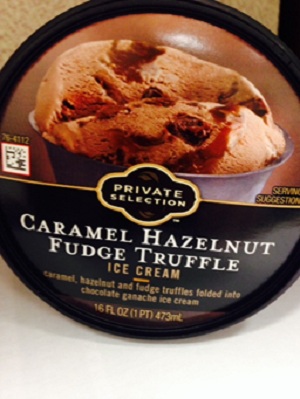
RECALLED – Chocolate Hazelnut Mascarpone Ice cream and Caramel Hazelnut Fudge Truffle Ice cream

April 26, 2014 – Product Recall – Two Private Selection Ice Cream Flavors Recalled for Undeclared Allergen.